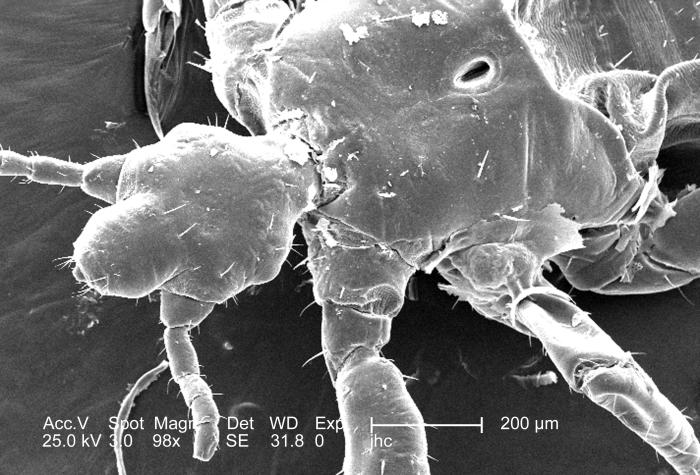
At a low magnification of 98x, this 2006 scanning electron micrograph (SEM) depicted a dorsal view of the head and left thorax of a male body louse, Pediculus humanus var. corporis. The entire left foreleg, or middle leg are not visible, but what is visible, includes each leg's coxa, trochanter, and femur, or the first, second, and third leg segments respectively. For a complete dorsal view of the louse's leg, see PHIL# 9228. The leg is composed of six segments: coxa, trochanter, femur, tibia, tarsus, and pretarsus or claw. In the case of the louse, the leg segments are very stout, and end in claws, which it used to firmly grasp clothing, or a host's hair shafts. Note how the exoskeletal covering appears to possess an added flexibility at the coxa-trochanteric joint.